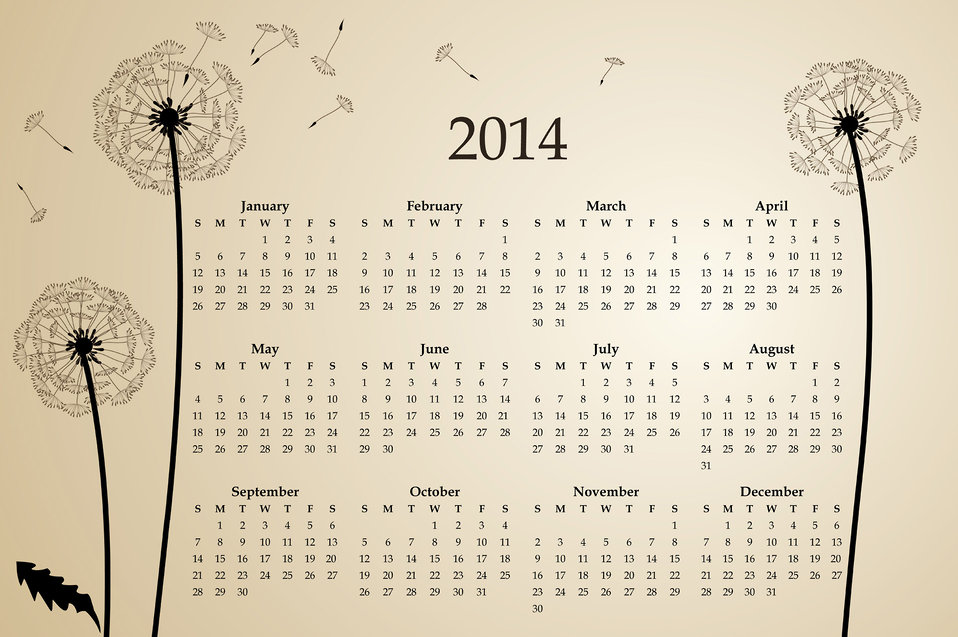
Calendar 2014

Dandelion calendar 2014.